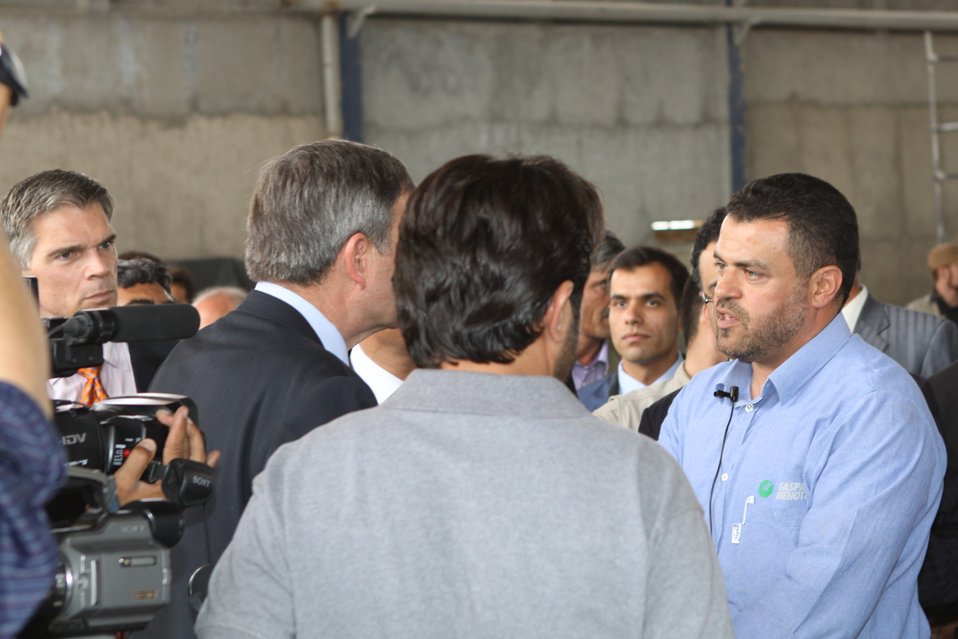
100525 Hirat Marble Conference 411